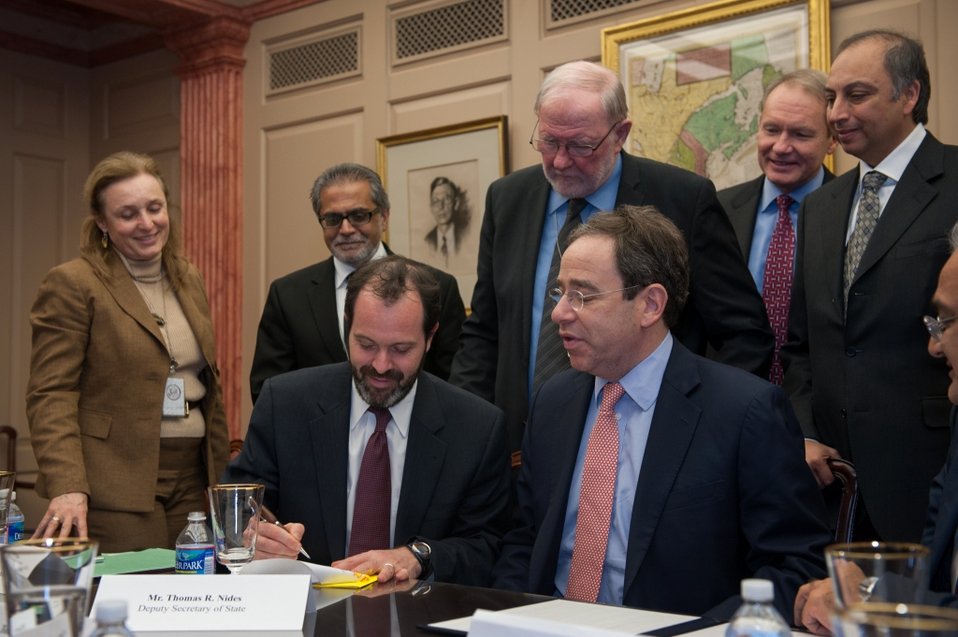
Deputy Secretary Nides Signs a Memorandum of Understanding

Deputy Secretary of State Thomas Nides signs a memorandum of understanding on behalf of the U.S. Department of State and the U.S. Agency for International Development with the Aga Khan Foundation that will help establish the first investment fund in Badakhshan, Afghanistan, to invest in social development projects, at a private ceremony at the U.S. Department of State in Washington, D.C., February 8, 2013.